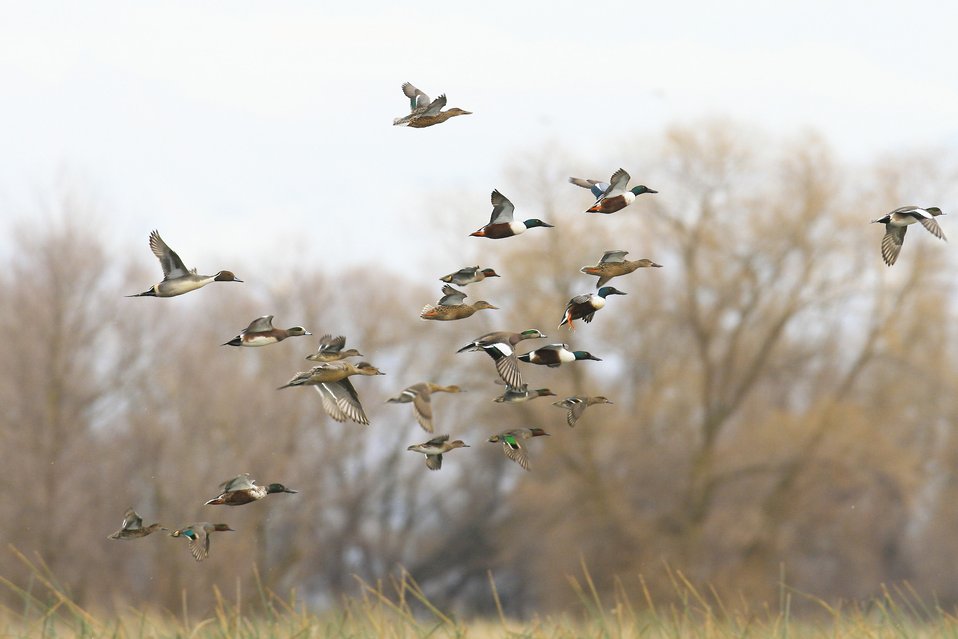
Mixed Ducks in Flight

Mixed ducks at the San Luis National Wildlife Refuge in CA.